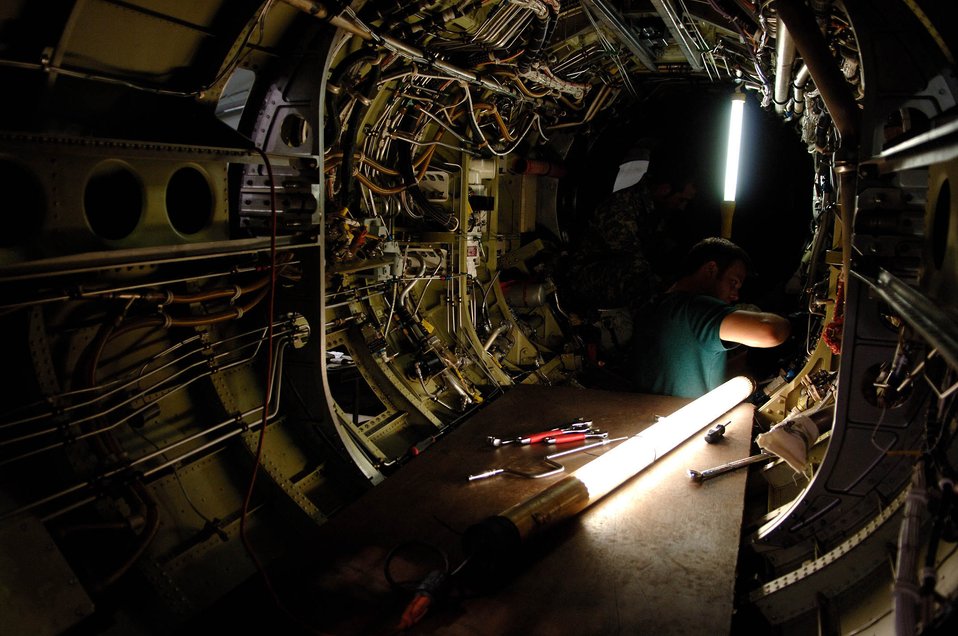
Light me up!

Jeff Knutson performs maintenance on a U-2